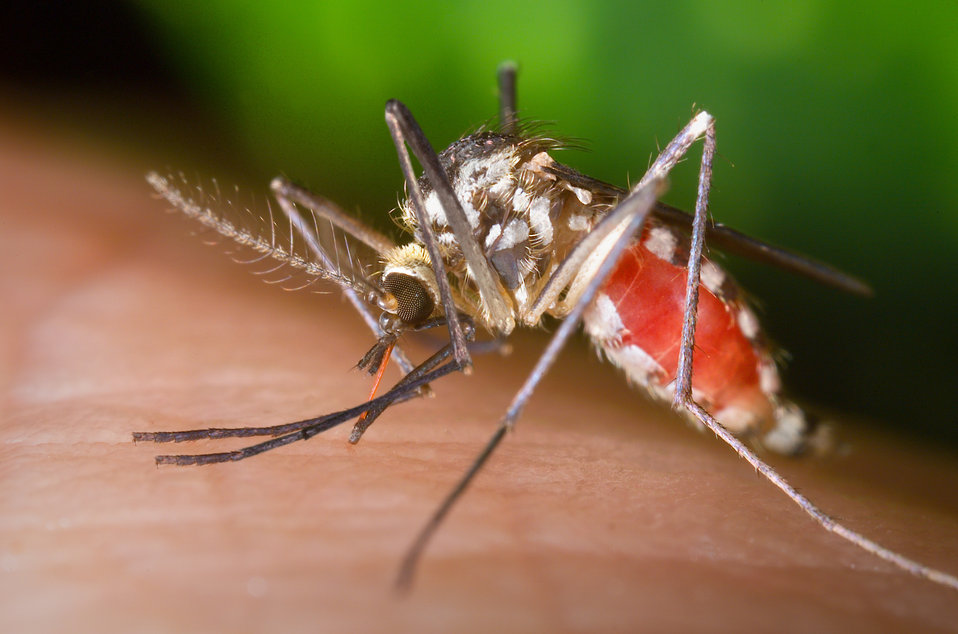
A mosquito biting a hand

This is an Ochlerotatus triseriatus mosquito obtaining a blood meal from a human hand.